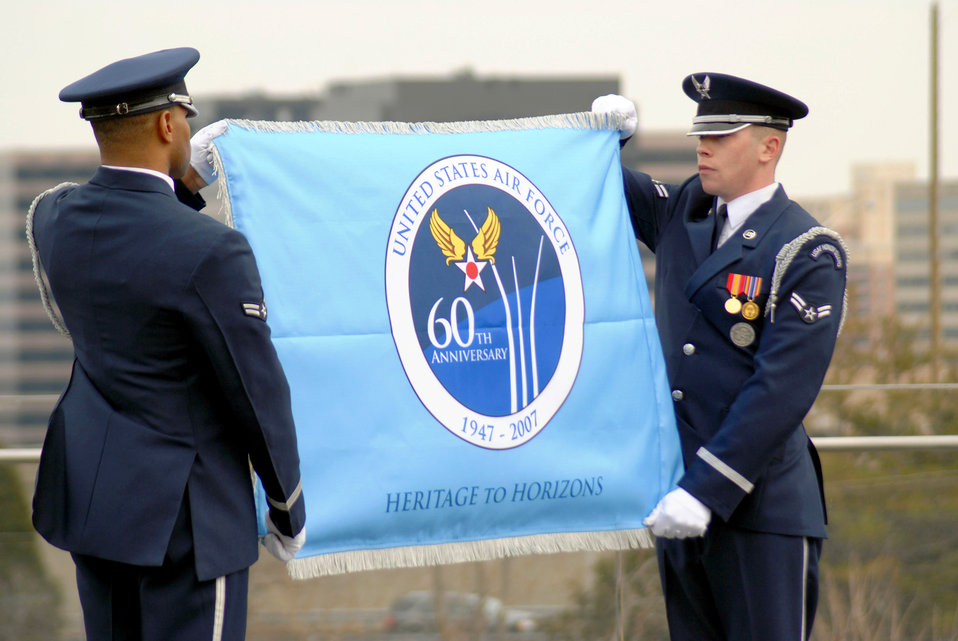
Air Force 60th Anniversary flag raised at memorial

Airmen 1st Class Ahmad Ware (left) and Brandon Bridges unveil the Air Force 60th Anniversary flag for the first time March 1 at the Air Force Memorial in Arlington, Va. The ceremony was attended by Chief of Staff of the Air Force Gen. T. Michael Moseley and Secretary of the Air Force Michael W. Wynn.